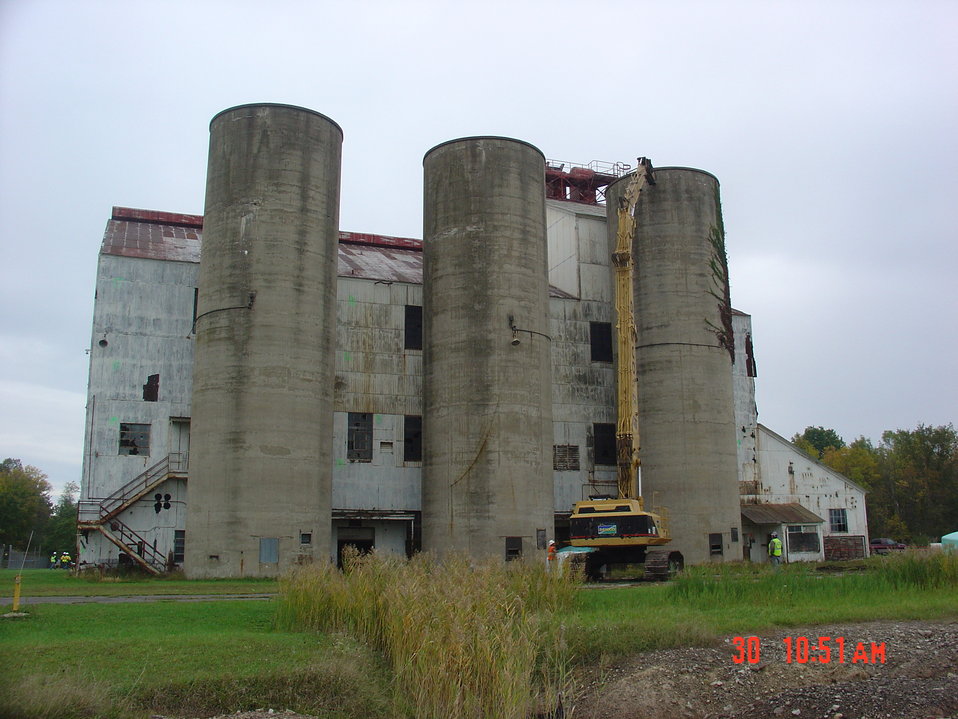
Building 401 silo demo landscape view.

Activities from the Niagara Falls Storage Site, which is associated with the former Lake Ontario Ordnance Works. Formerly Utilized Sites Remedial Action Program (FUSRAP), a program initiated in 1974 to identify, investigate and clean up or control sites that were part of the Nation's early atomic energy and weapons program. Activities at the sites that are eligible for FUSRAP were conducted by Manhattan Engineer District (MED) or the Atomic Energy Commission (AEC), both predecessors of the Department of Energy (DOE). The U.S. Army Corps of Engineers was assigned management of FUSRAP by Congress in 1997.